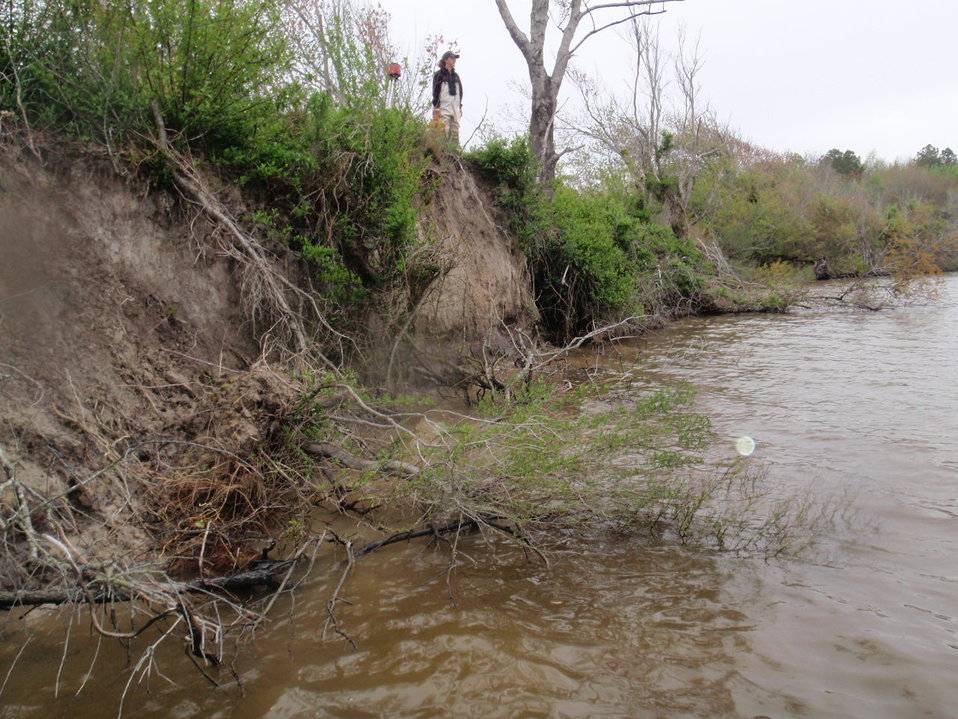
Berm erosion at Lake Tecumseh before weir installation

Severe erosion that occurred along the berm at Lake Tecumseh due to fluctuating water levels during signifcant wind events.